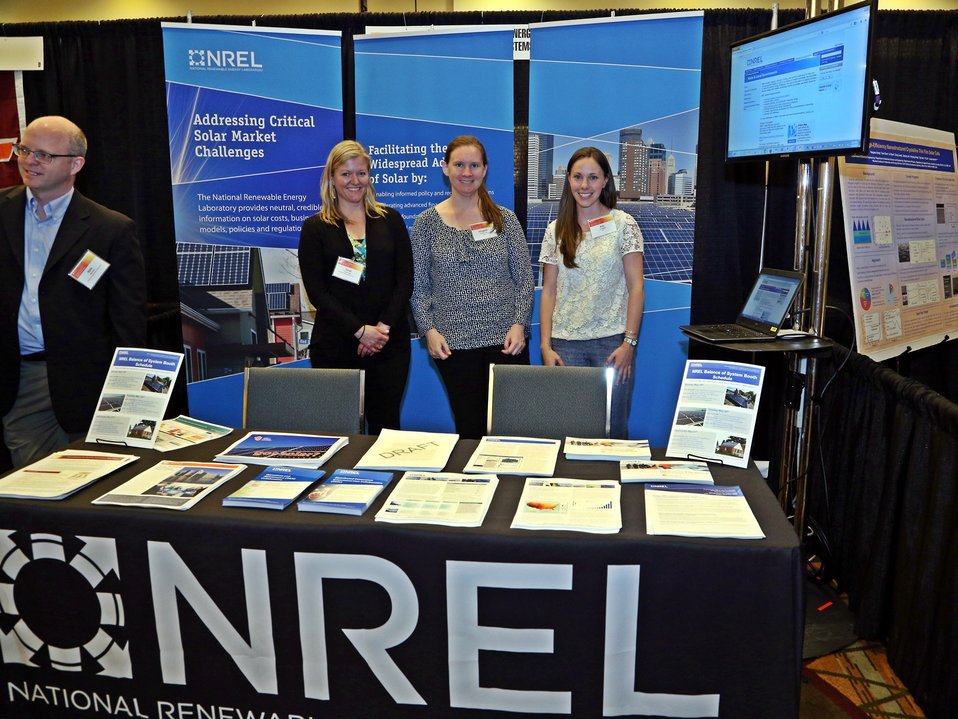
Tech Forum 13

Members of NREL at their booth.